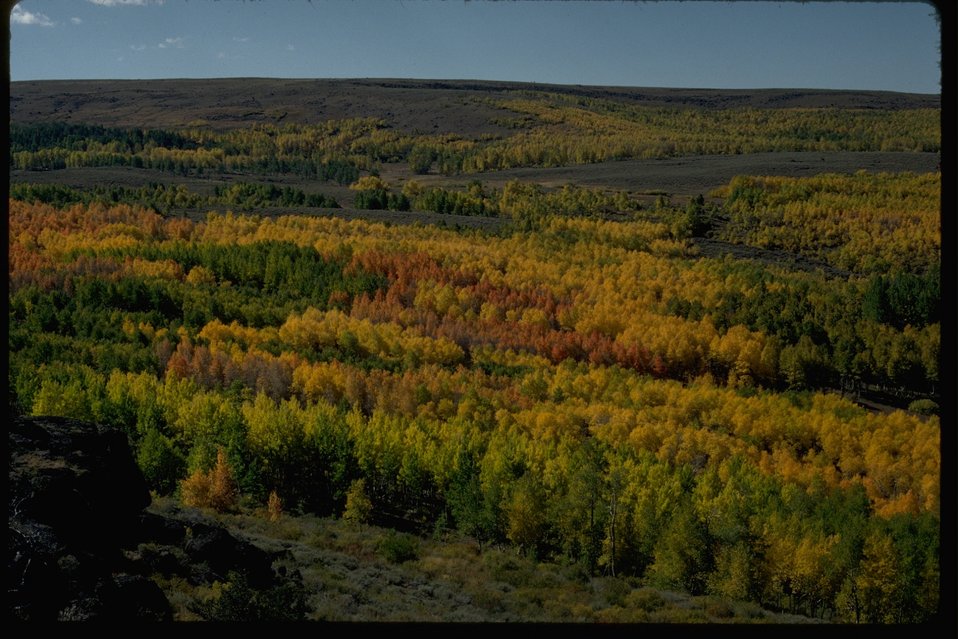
Fall colors in Fish Creek Canyon aspen forest.